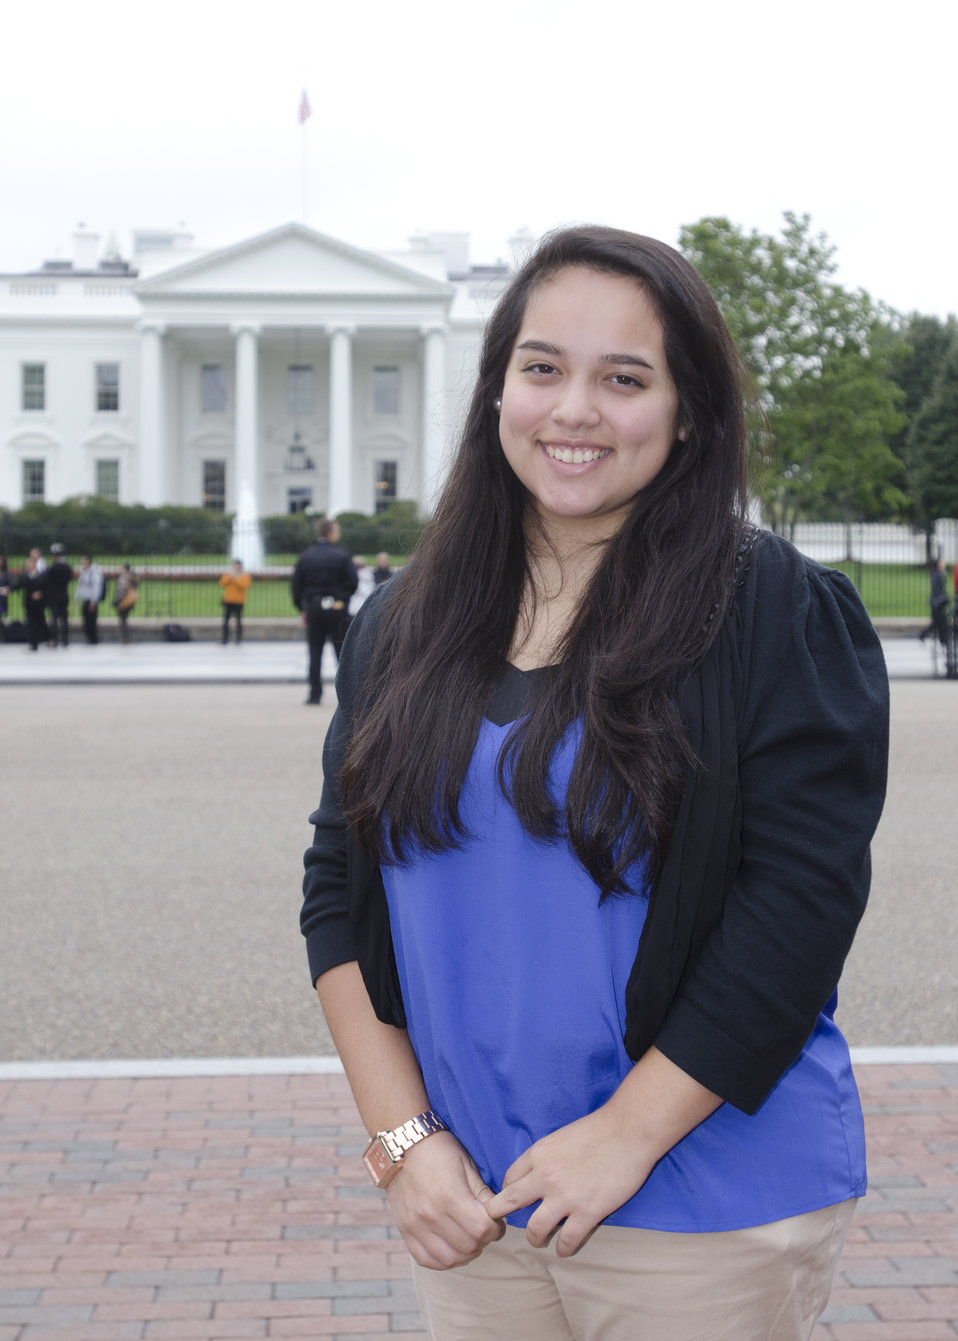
Champion of Change recipient Chamonix Mejia from Texas in front of the White House in Washington, D.C. on Tuesday, Oct. 9, 2012. She has been an active 4-H member for the past 11 years and through her club, Mesquite Rangers, she has encouraged 4-H’ers to value the many opportunities that 4-H has to offer and to strive “To Make the Best Better.” She has worked hard to improve her community through various community service projects and by encouraging the youth of her community to set high expectations for themselves.